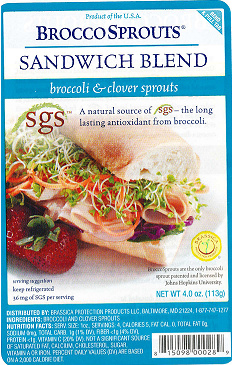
RECALLED - Sprouts

December 31, 2011 - RECALL Green Valley Food Corp. is Expanding Its Recall to Include Additional Products Because of a Possible Health Risk.